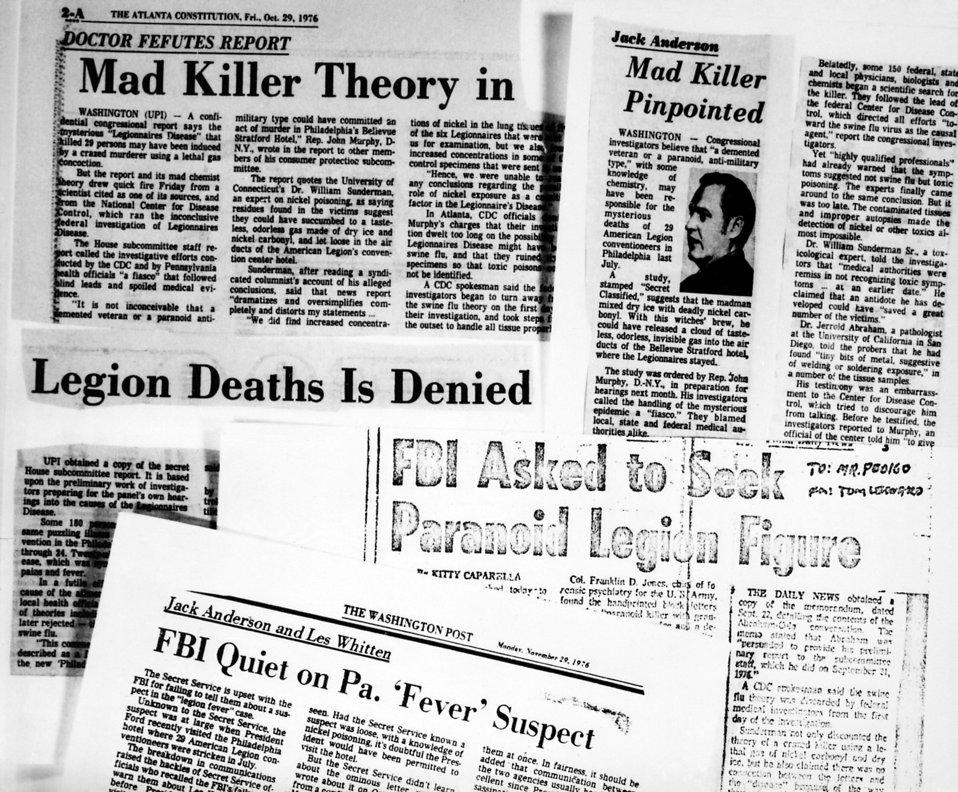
Legionnaires' Disease newspaper articles during the outbreak of the 1970s.